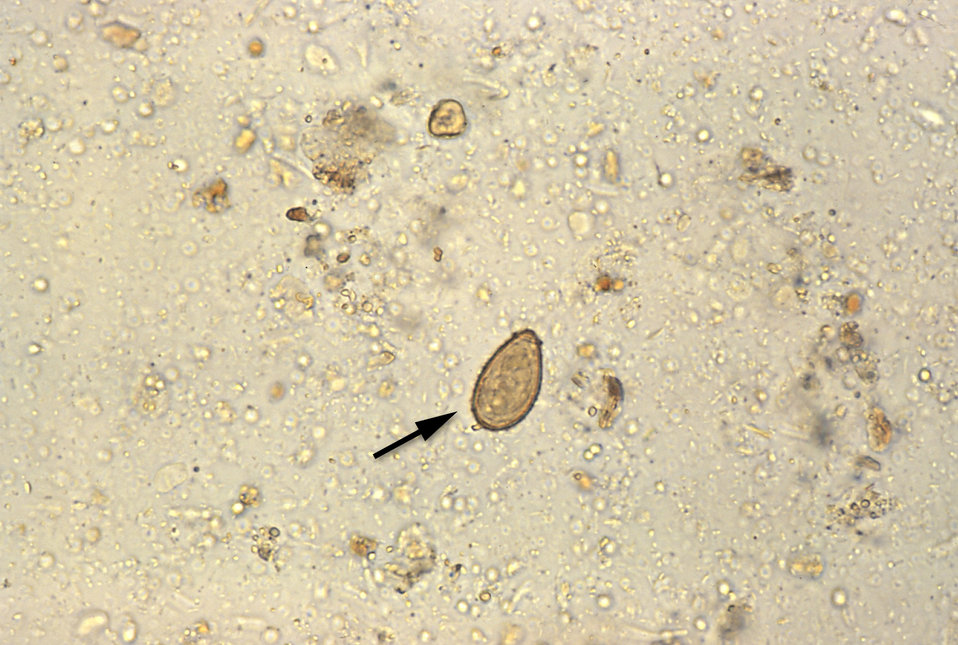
This micrograph reveals an egg from the Oriental, or Chinese liver fluke, Clonorchis sinensis; Mag. 400X.